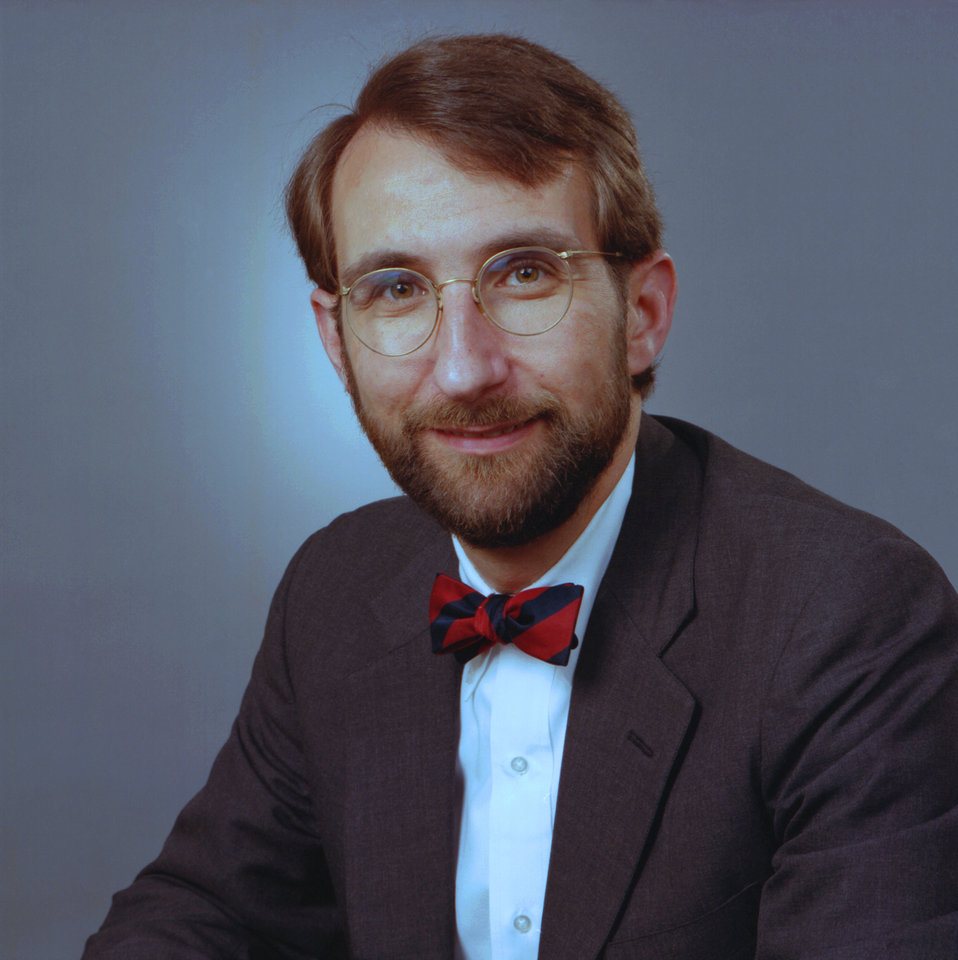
This photograph depicted one of the Centers for Disease Control's (CDC) former Directors, William L. Roper, M.D., M.P.H., who was the organization's Director from 1990 until 1993. In Dr. Roper's own words, 'Overall, efforts at CDC during 1990--1993 were focused on strengthening the role of public health in the nation's health system and emphasizing the value of prevention as the essential path to good health. By strengthening relationships with public health partners, building new partnerships with the private sector, and increasing the diversity of CDC's workforce, CDC became better equipped to fulfill its role as the nation's prevention agency.'